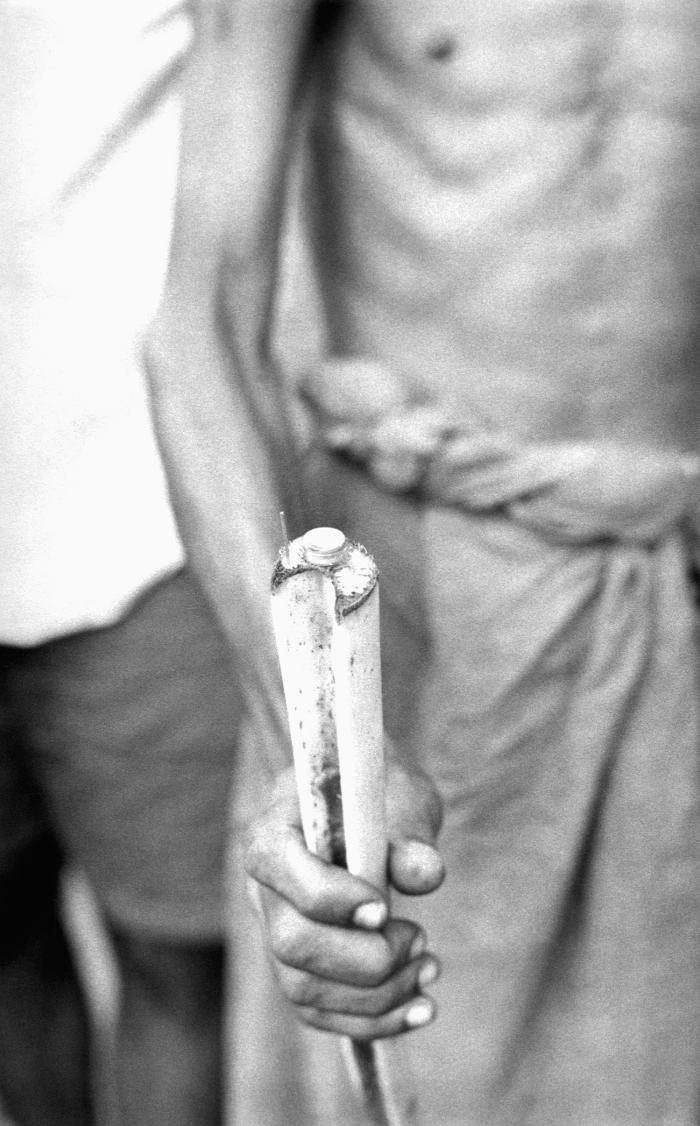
This local smallpox eradication team member displayed a high degree of ingenuity in keeping his vial of smallpox vaccine cool while he made the rounds from house to house, by placing the vial inside the core of a palm branch. You'll note the placement of a single bifurcated needle in the branch as well, which was worrisome, for using the same needle between vaccine recipients could have facilitated the spread of other blood-borne diseases. Today, the practice of needle-reuse would be completely unacceptable knowing what we now understand about the spread of HIV/AIDS and hepatitis.